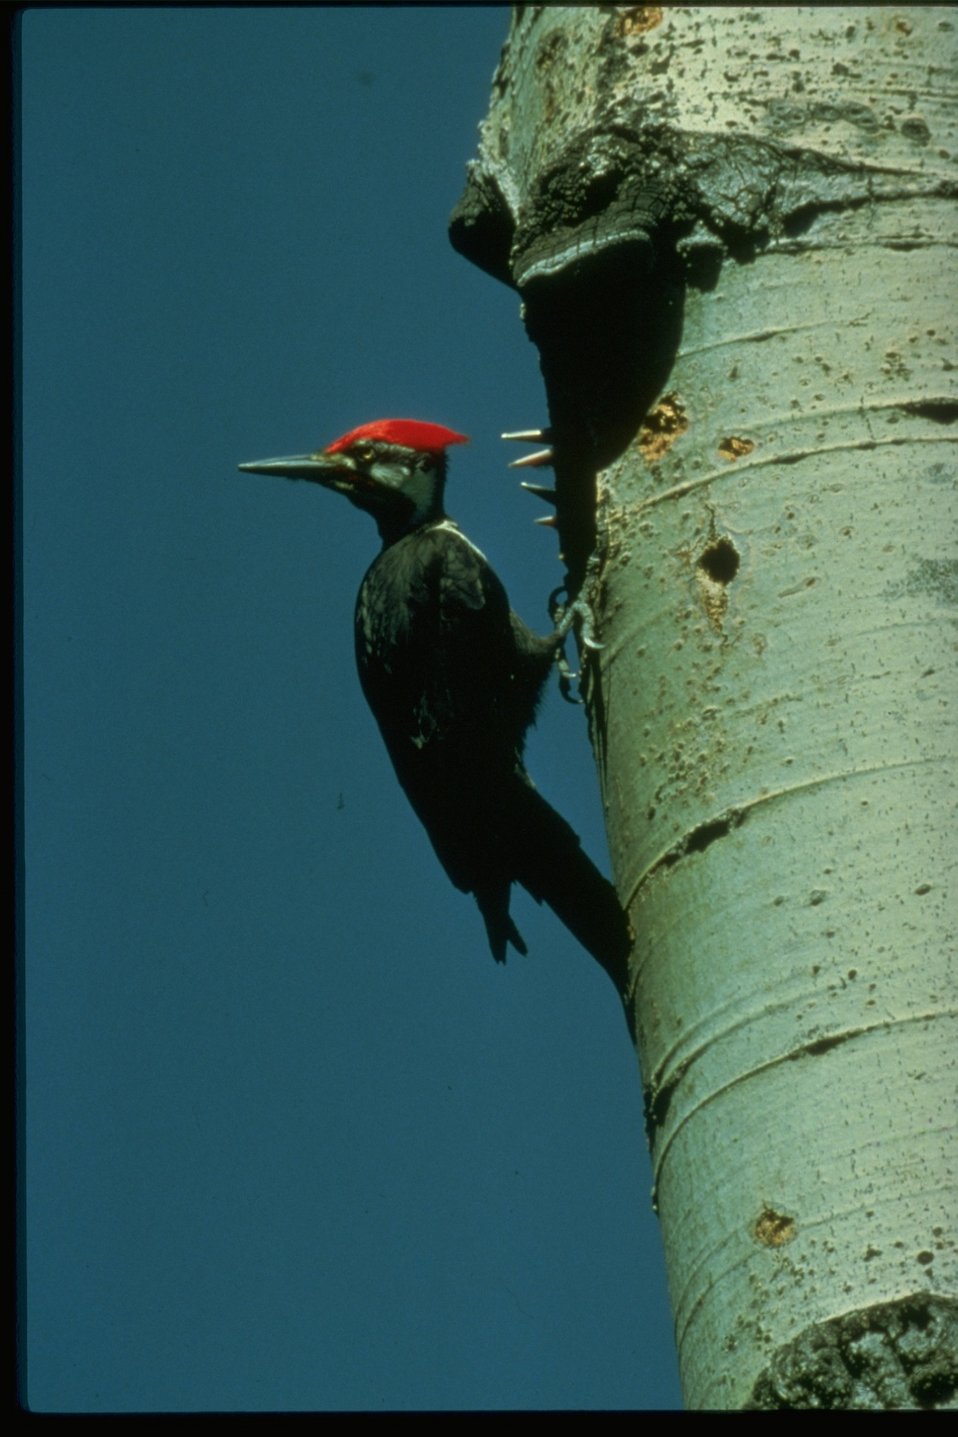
Pilliated Woodpecker.